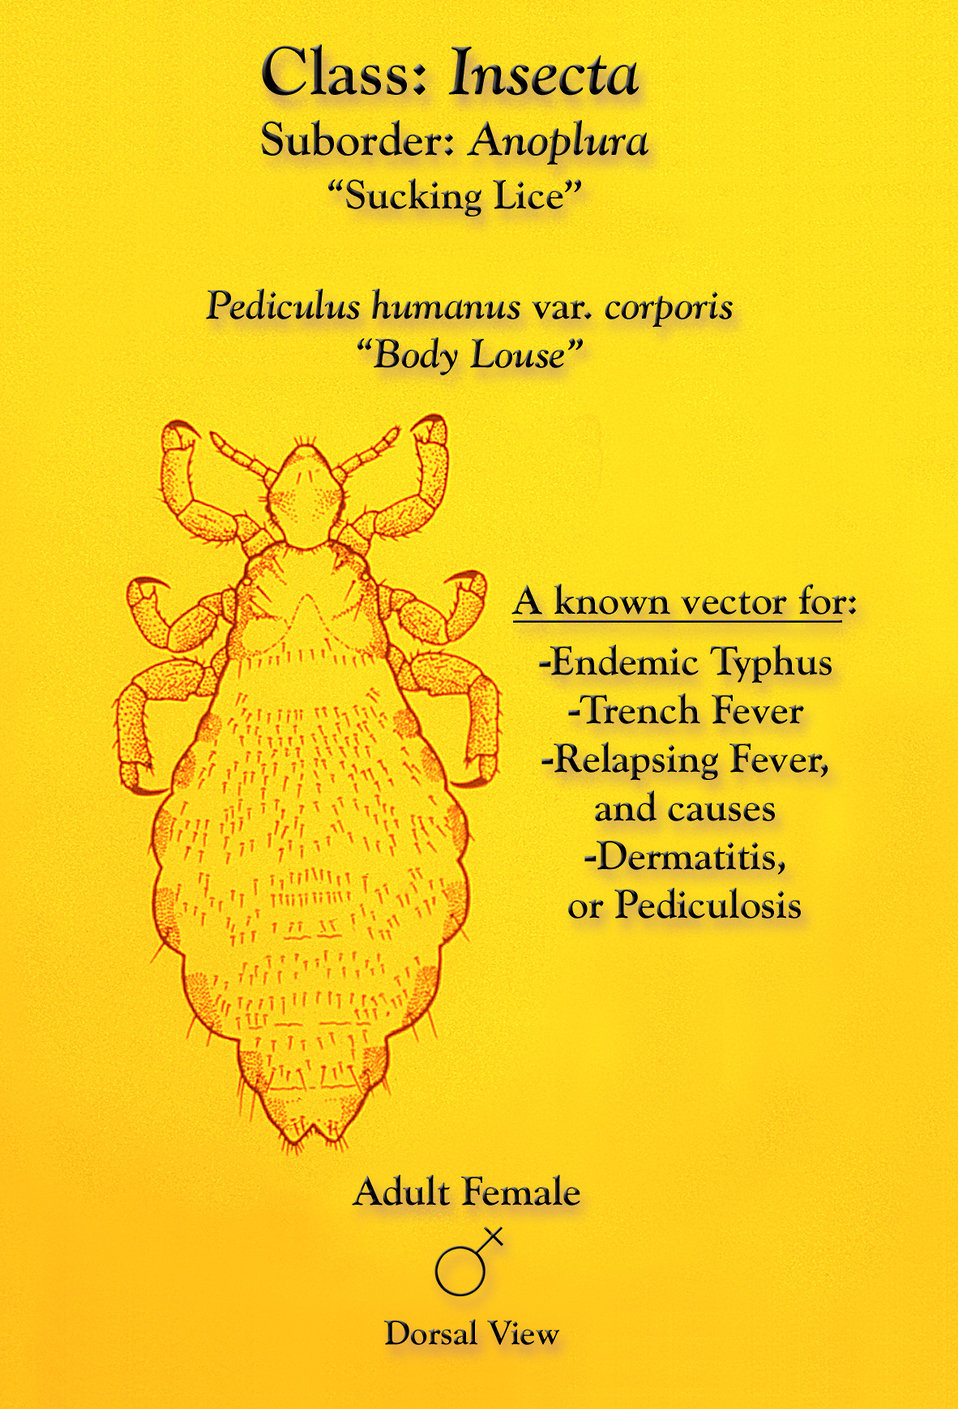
This illustration depicts a dorsal view of a female body louse, Pediculus humanus var. corporis.